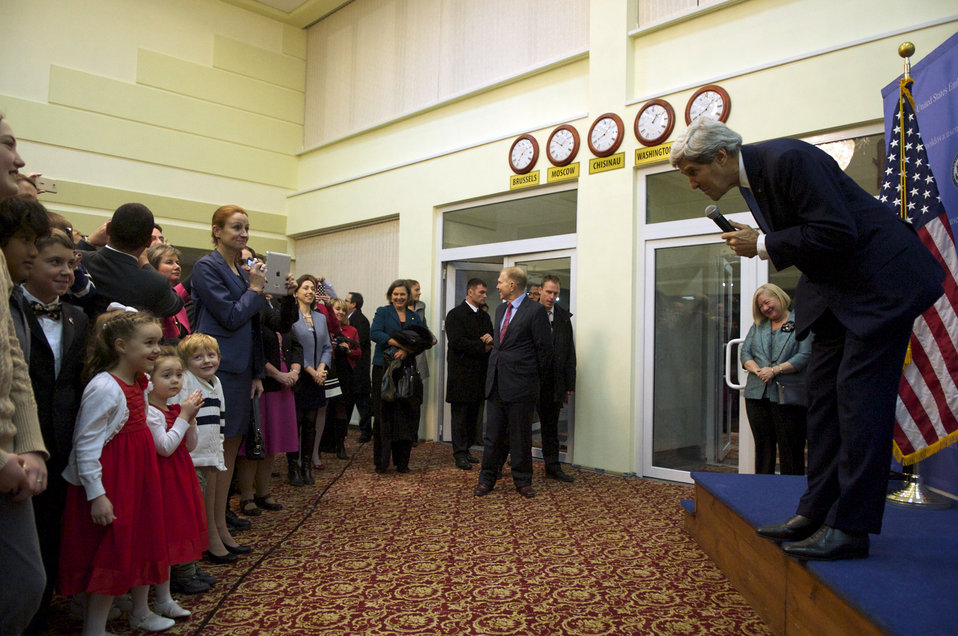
Secretary Kerry Greets the Children of Embassy Chisinau Employees

U.S. Secretary of State John Kerry says hello to the children of employees at the U.S. Embassy in Chisinau, Moldova, during a visit to the country on December 4, 2013.